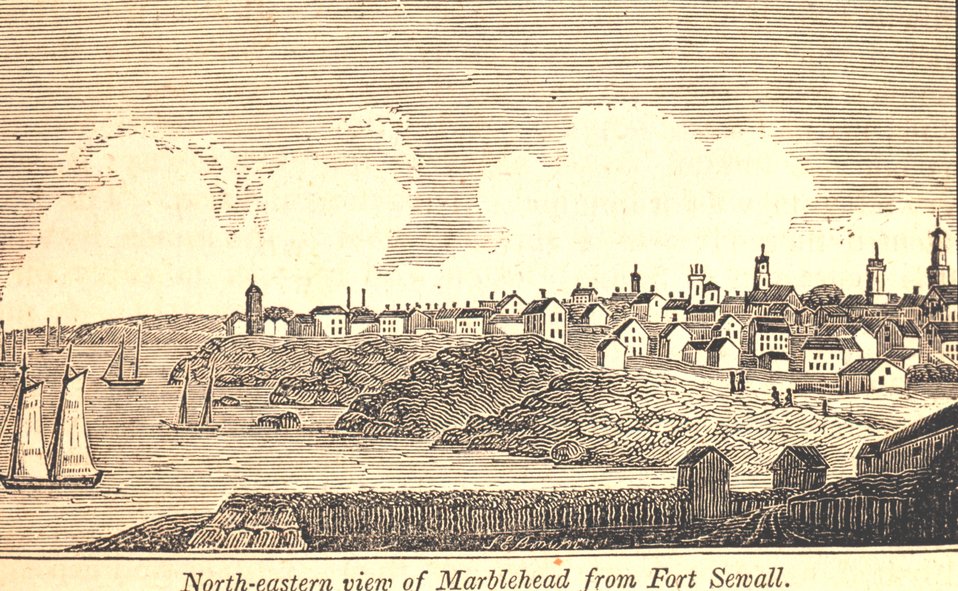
Northeastern view of Marblehead from Fort Sewall. In: Historical Collections ... of Every Town in Massachusetts. 1841.